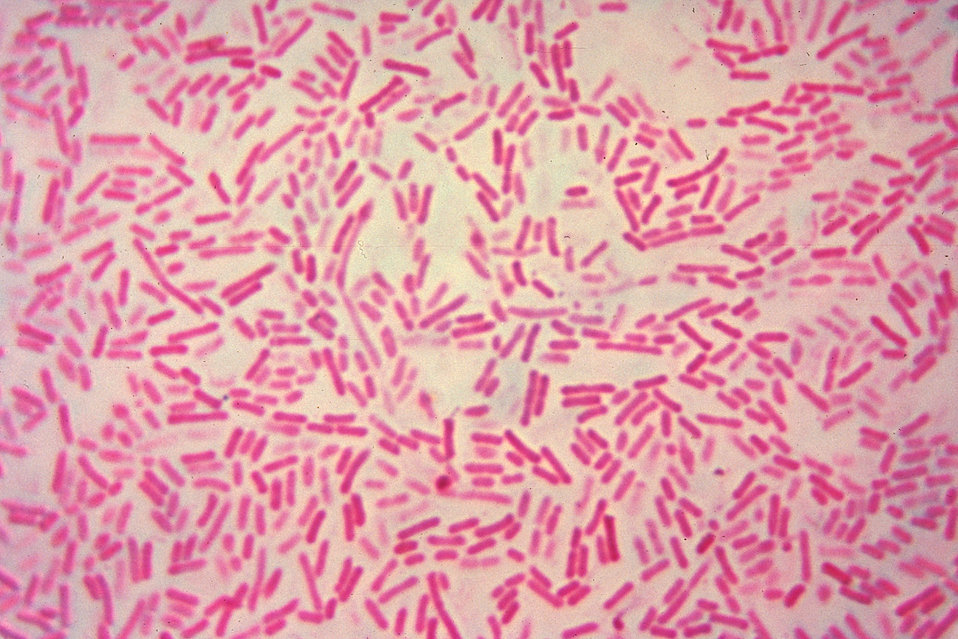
This micrograph depicts Bacteroides hypermegas bacteria cultured in blood agar medium for 48 hours.